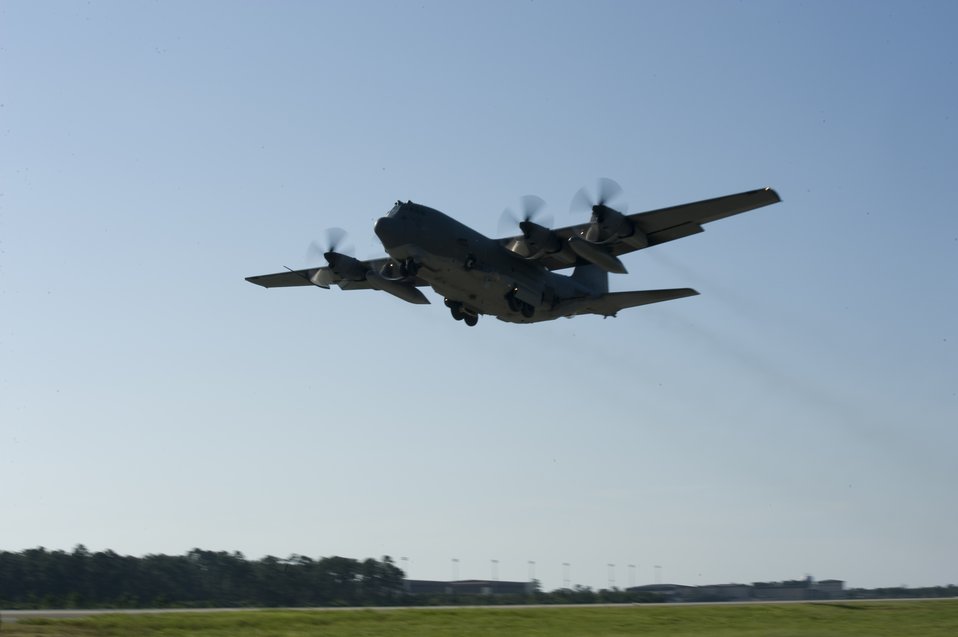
Tropical Storm Preparation

A C-130 takes off from the flightline at Hurlburt Field, Fla., Aug. 26, 2012. Hurlburt Field assets were being evacuated as Tropical Storm Isaac approaches the base.